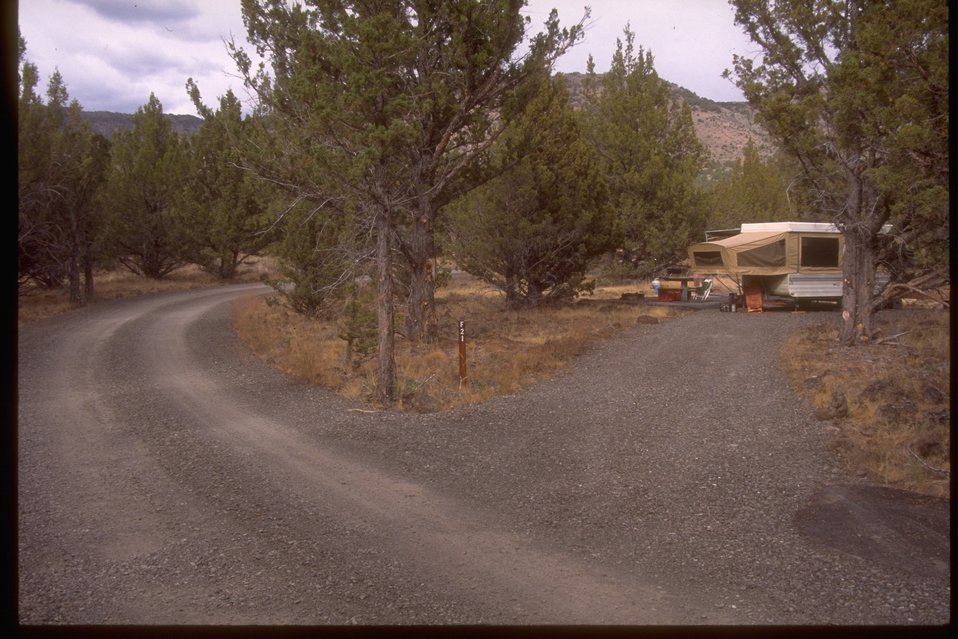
South Steens Loop Campground.